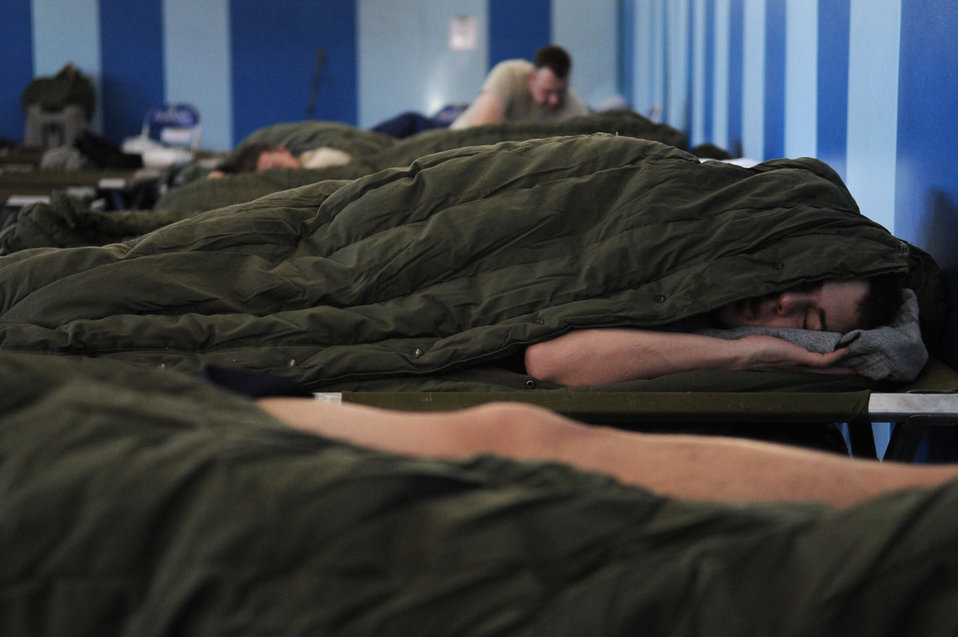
Airmen deploy to Aviano

Deployed Airmen sleep in cots March 22, 2011, while residing in temporary quarters at Aviano Air Force Base, Italy.